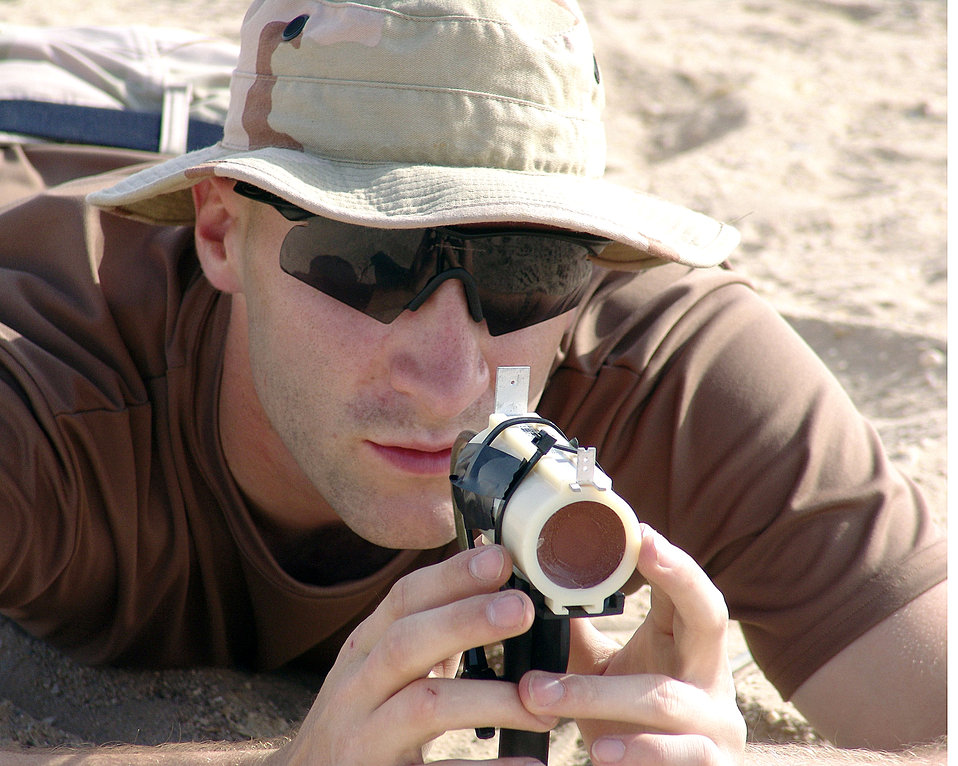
By my mark

SOUTHWEST ASIA -- Senior Airman Gordon Hohman sights in a mark to see the impact that it has with certain materials. He is assigned to the 386th Expeditionary Civil Engineer Squadron's explosive ordnance disposal unit.